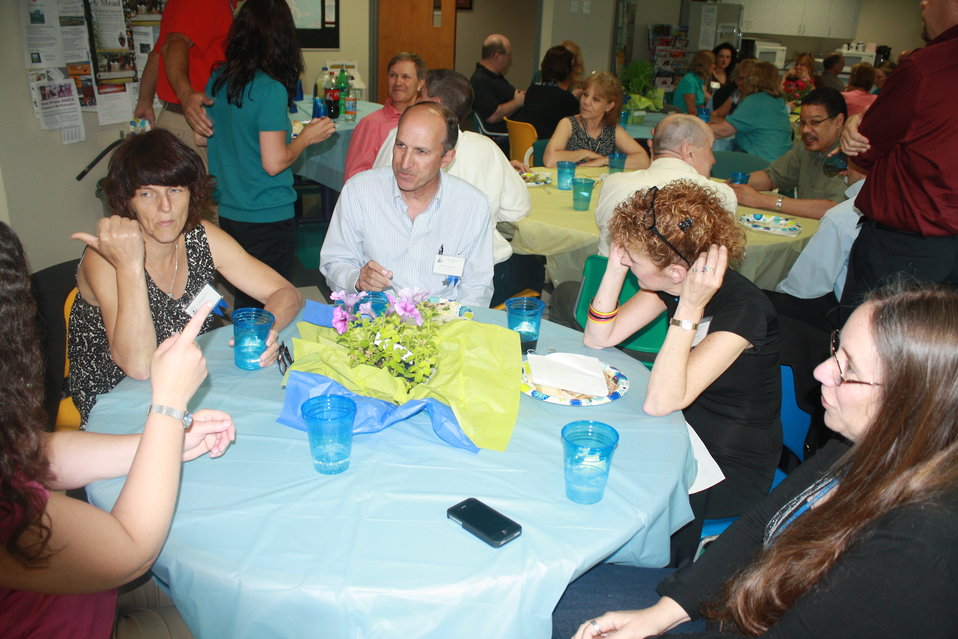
R5 Award ceremony